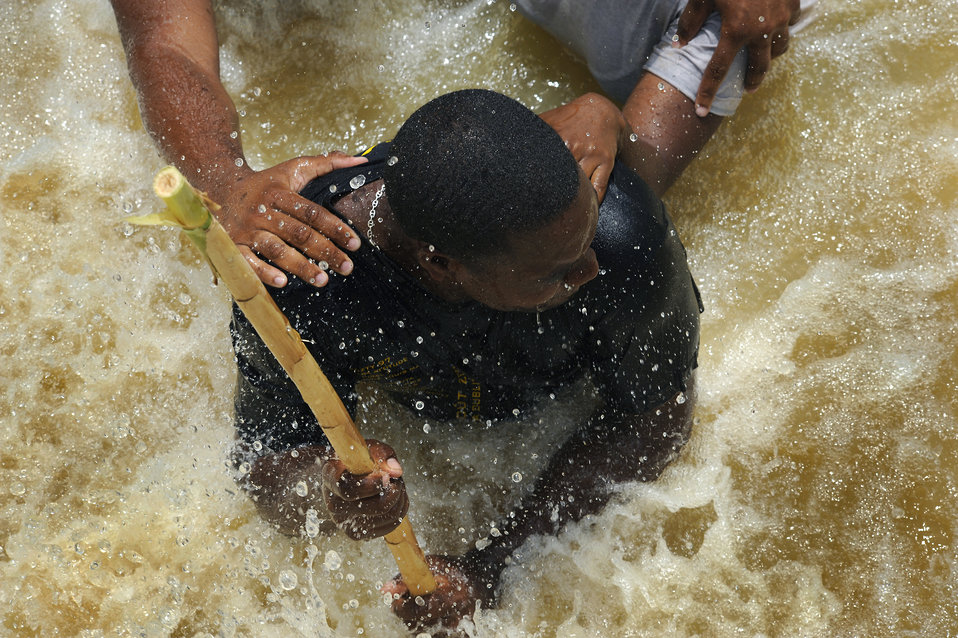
Operation Southern Partner

Constable Damon Kangal of the Royal St. Lucia Police Force's Special Service Unit leads a team in a